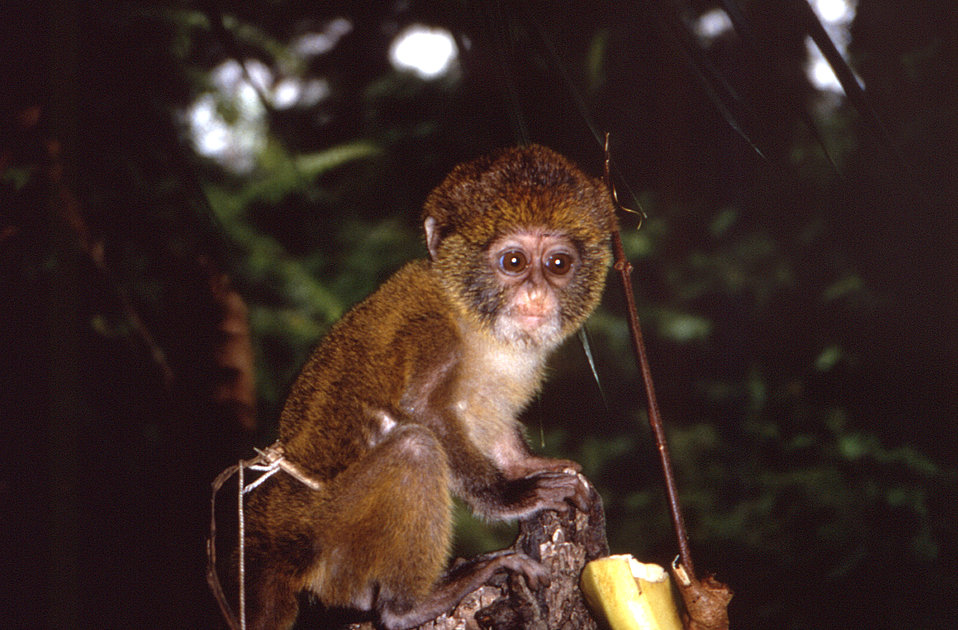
This image was created during an investigation into an outbreak of monkeypox, which took place in the Democratic Republic of the Congo (DRC), 1996 to 1997, formerly Zaire. Pictured here, was a Cercopithecus sp. monkey, which had been presented to the team by villagers within the Katako-Kombe Health Zone, of the DRC. During the investigation, two of these monkeys, a Spot-nosed monkey, Cercopithecus ascanius, and a Debrazza monkey, Cercopithecus neglectus, were both tested for the presence of monkeypox using the monkeypox virus plaque reduction neutralization antibody assay, and both were found to be negative.